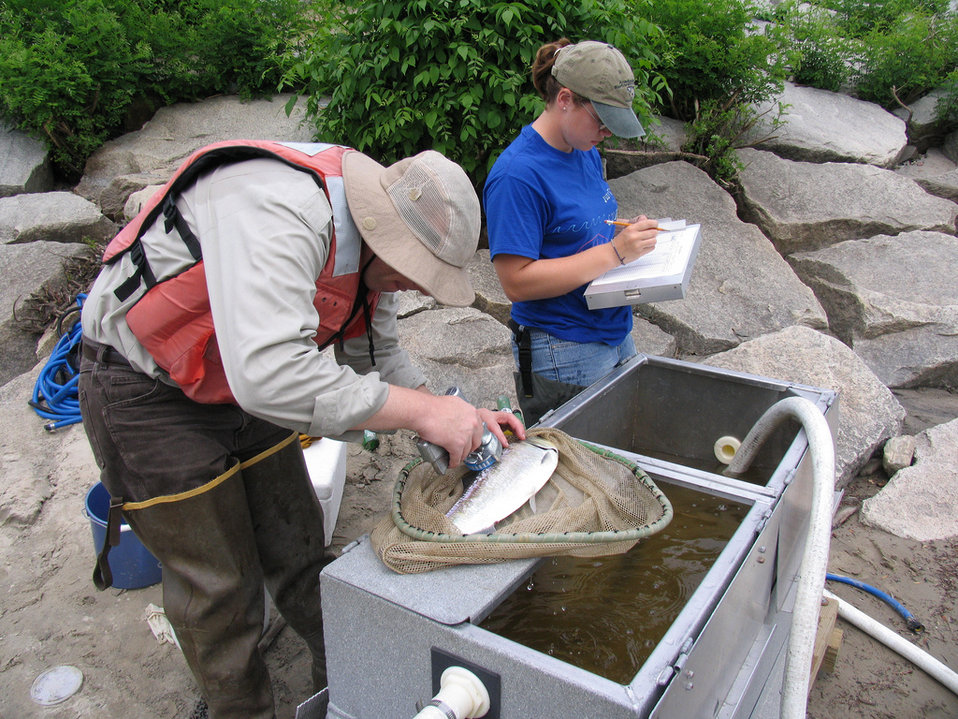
Merrimack shad sampling

U.S. Fish and Wildlife Service